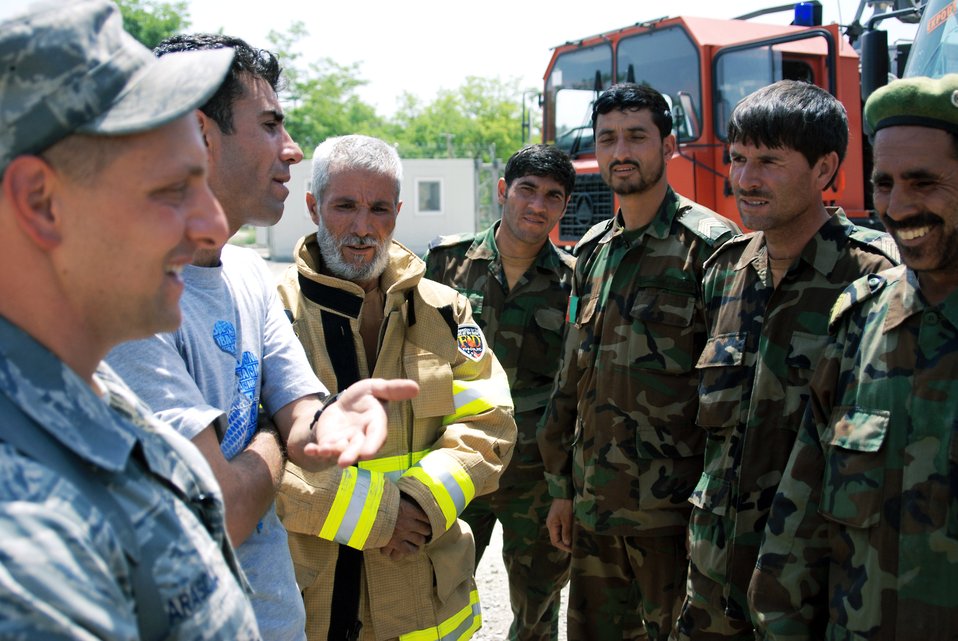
Afghan student firefighters put to the test

Master Sgt. Michael Marascia of the Combined Air Power Transition Force, congratulates his students from the Afghan National Army Air Corps after a successful firefighting exercise May 12 at Kabul, Afghanistan. The four-month course has been conducted under the sole mentorship of Sergeant Marascia, who is deployed from Langley Air Force Base, Va.